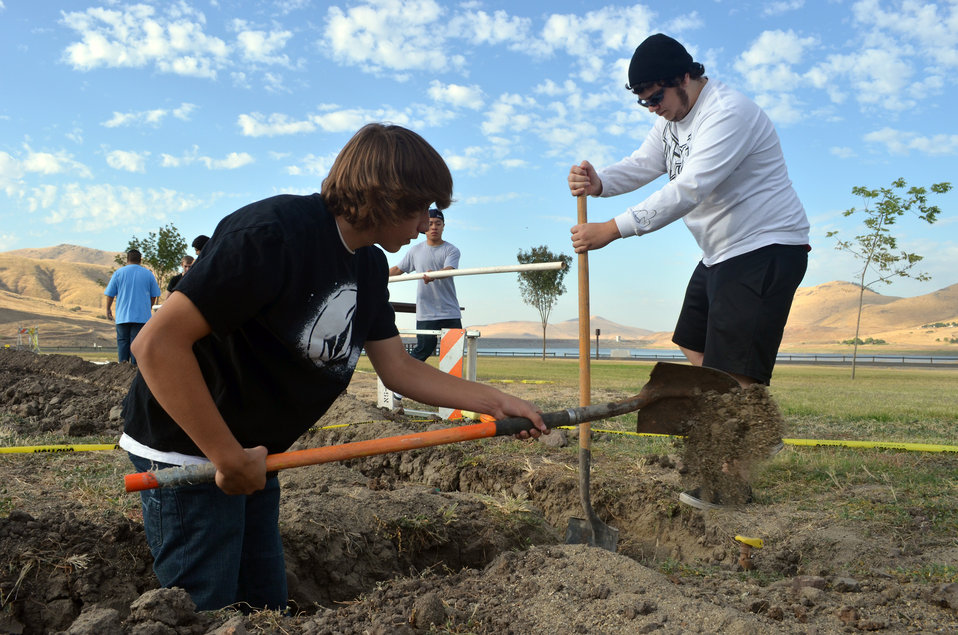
National Public Lands Day at Success Lake

Volunteers at Success Lake near Porterville, Calif., dig a trench for an irrigation line in celebration of National Public Lands Day Sept. 24. More than 250 volunteers turned out to help plant trees and help at the park. Success Lake was one of seven U.S. Army Corps of Engineers Sacramento District recreation parks that participated in the event.